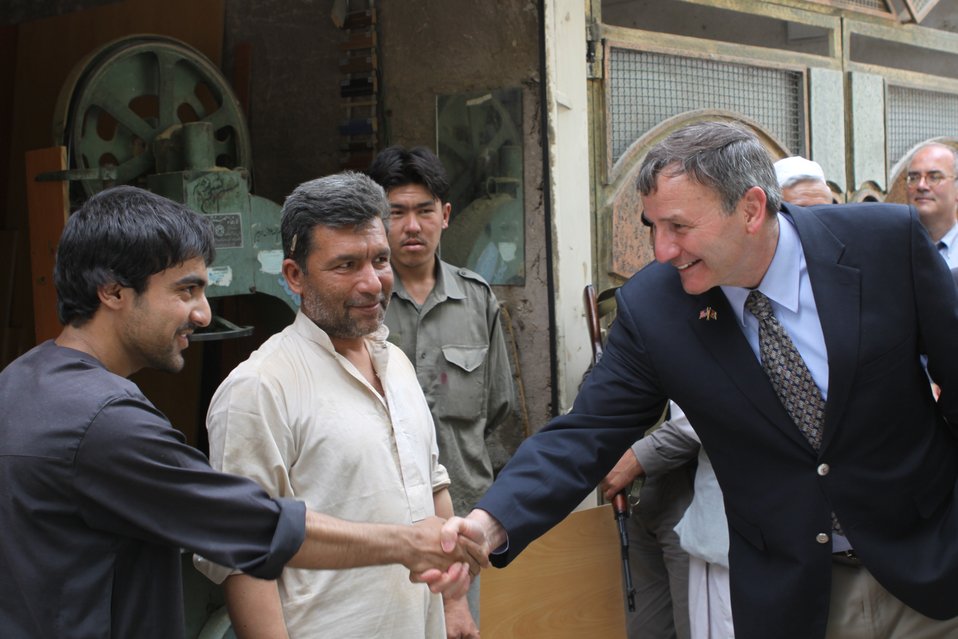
100525 Hirat Marble Conference 693